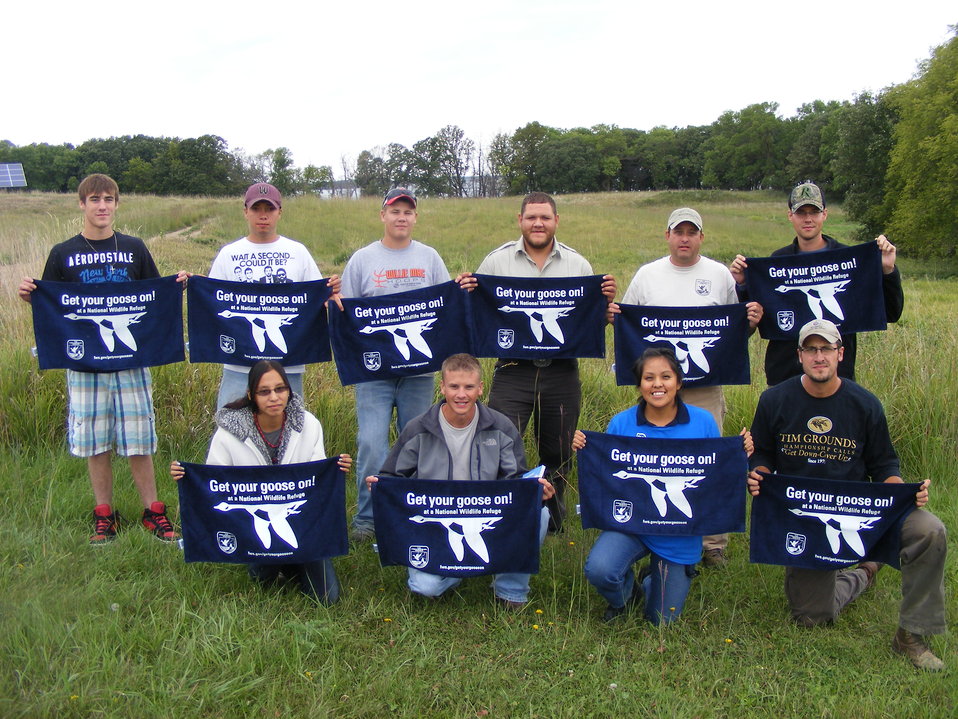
Get Your Goose On!

The Waubay National Wildlife Refuge summer crew poses for the camera.